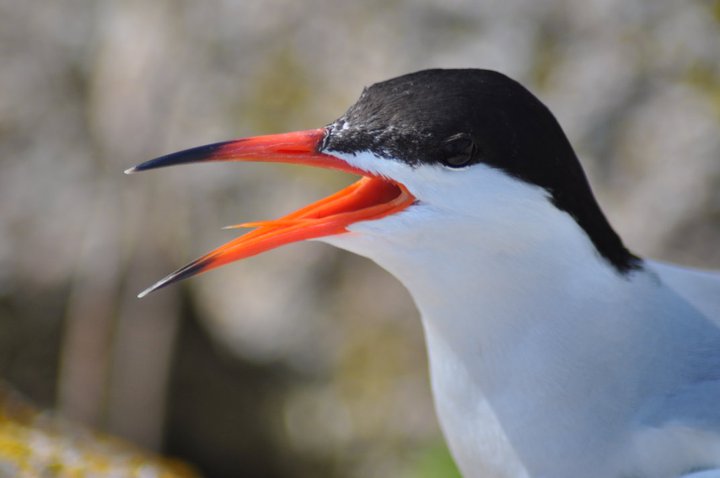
Common Tern

A common tern at the Nantucket National Wildlife Refuge, MA.